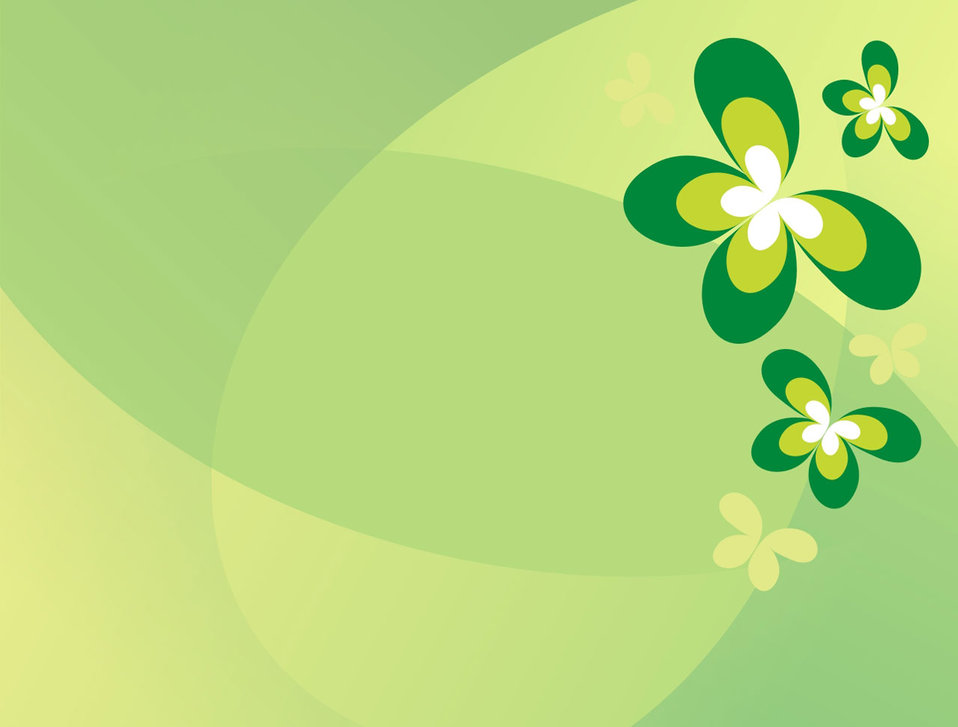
Spring is coming

Butterfly spring background in yellow and green.